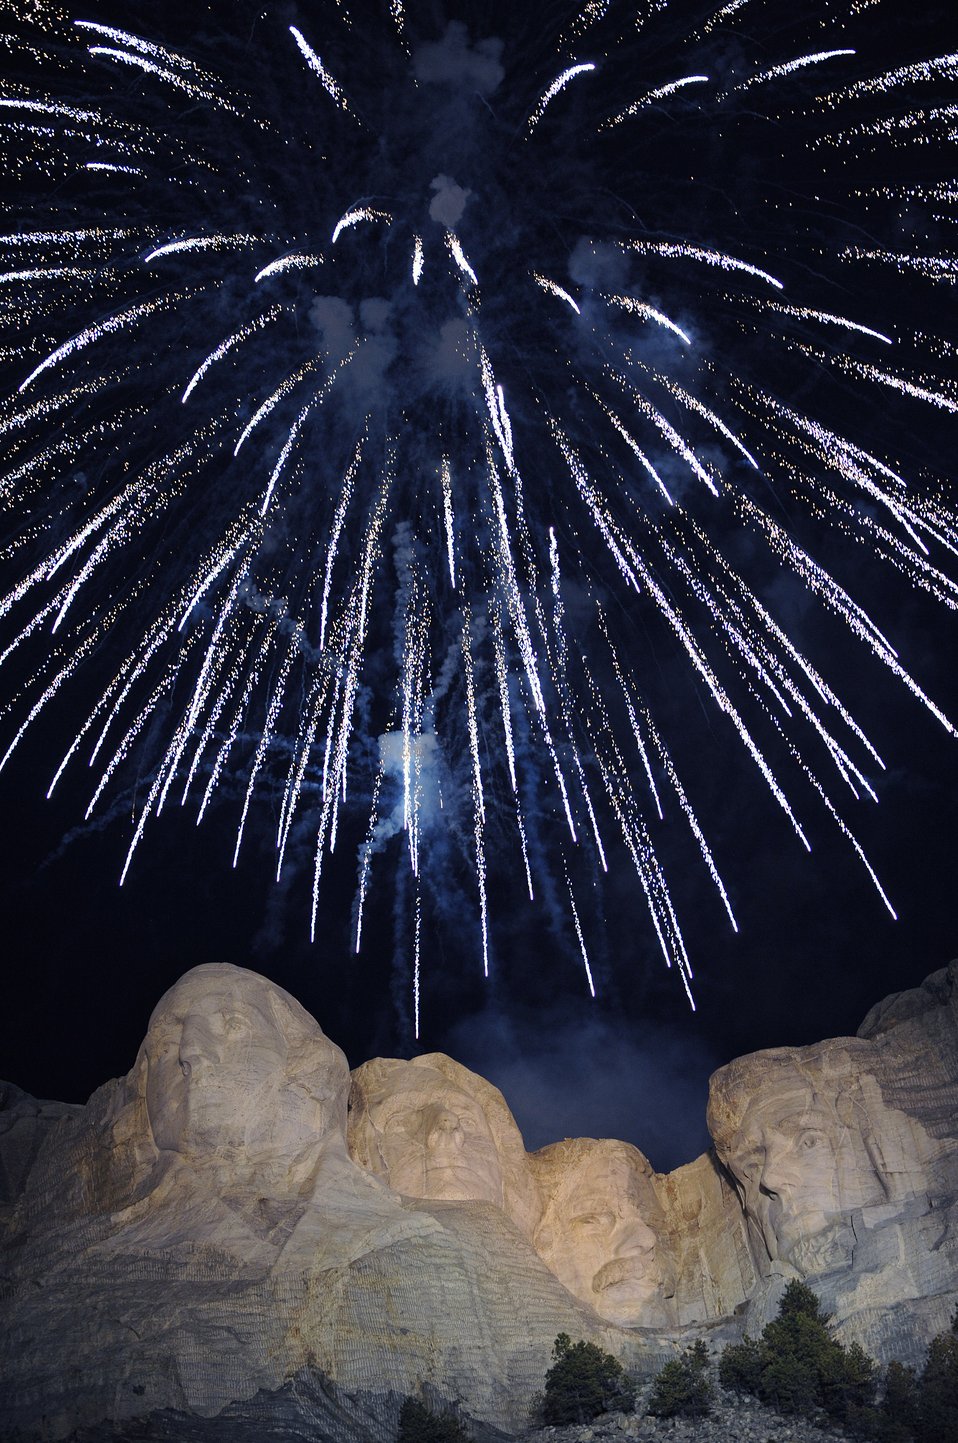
Celebrating Independence

Fireworks detonate July 3 above the Mount Rushmore National Memorial in South Dakota. Approximately 30,000 people came to the memorial for the 2008 Independence Day celebration.